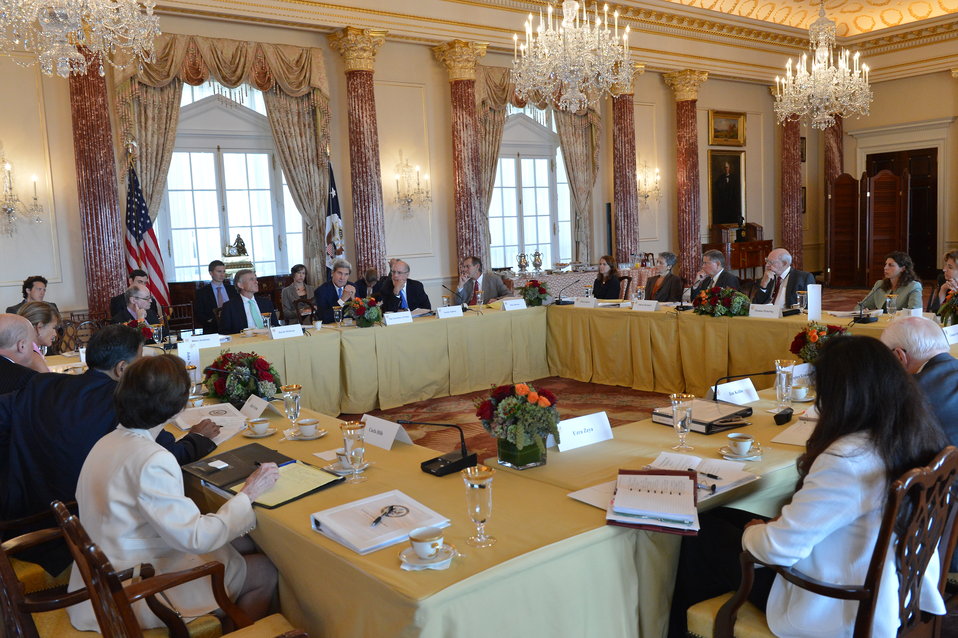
Secretary Kerry Meets With the Foreign Affairs Policy Board

U.S. Secretary of State John Kerry meets with the Foreign Affairs Policy Board at the U.S. Department of State in Washington, DC on September 11, 2013.